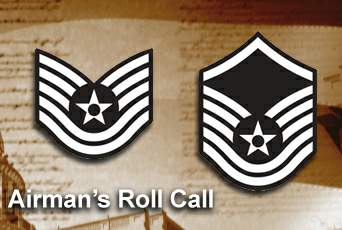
Airman's Roll Call

This week's Airman's Roll Call focuses on separating promotion release dates for master, technical sergeants.